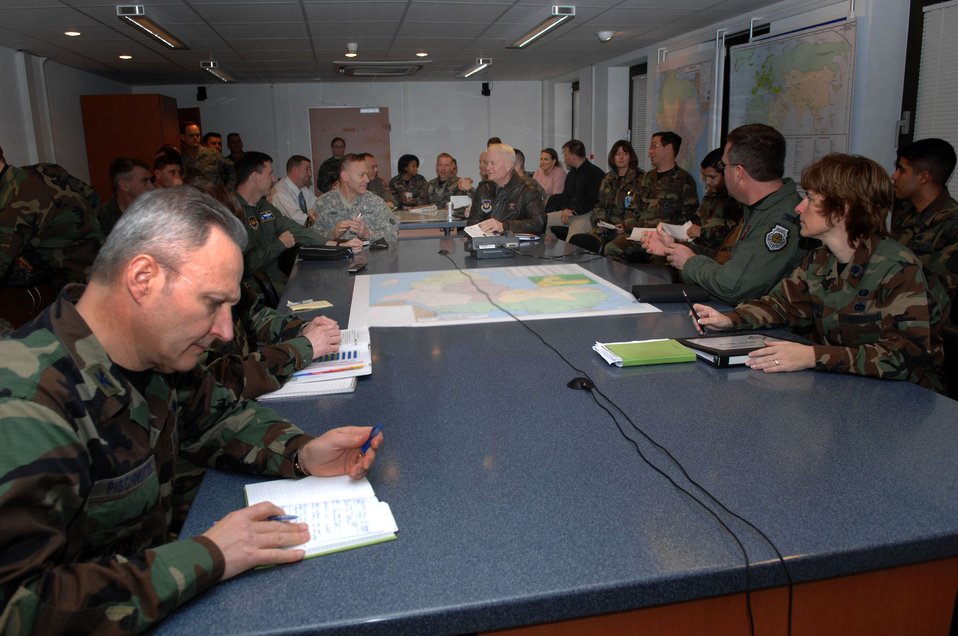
Challenges no match for joint task force

Lt. Gen. Rod Bishop (center right) and Army Brig. Gen Steve Lanza (center left), Joint Task Force-Nomad Fire commander and deputy commander respectively, receive an update briefing on the daily operations of the activities associated with President George W. Bush's five-nation visit to Africa. JTF-NF was established to provide support to various functions including Air Force One as well as to provide aeromedical support, command and control support and helicopter support in Liberia.